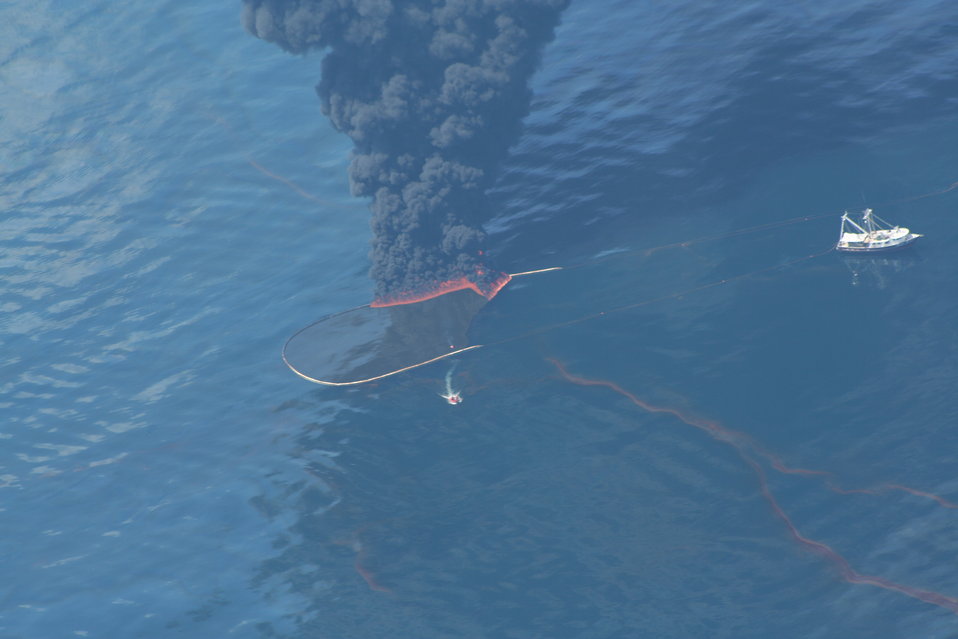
May 6 Open Water Oil Burn

May 6, 2010 - Open-water oil burn

Photo taken from U.S. EPA's Airborne Spectralphotometric Environmental Collection Technology (ASPECT) aircraft.